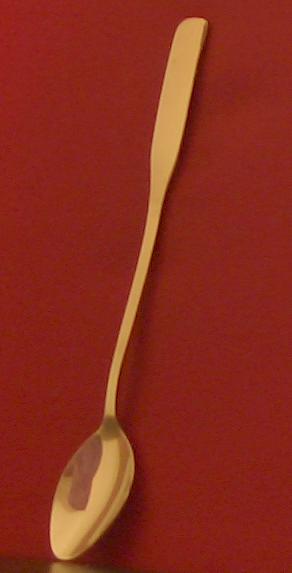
Iced tea spoon